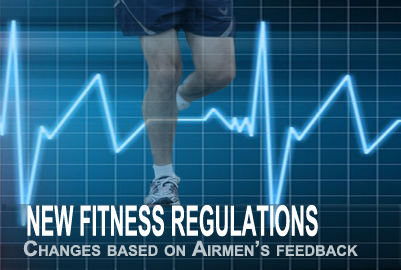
New fitness regulations